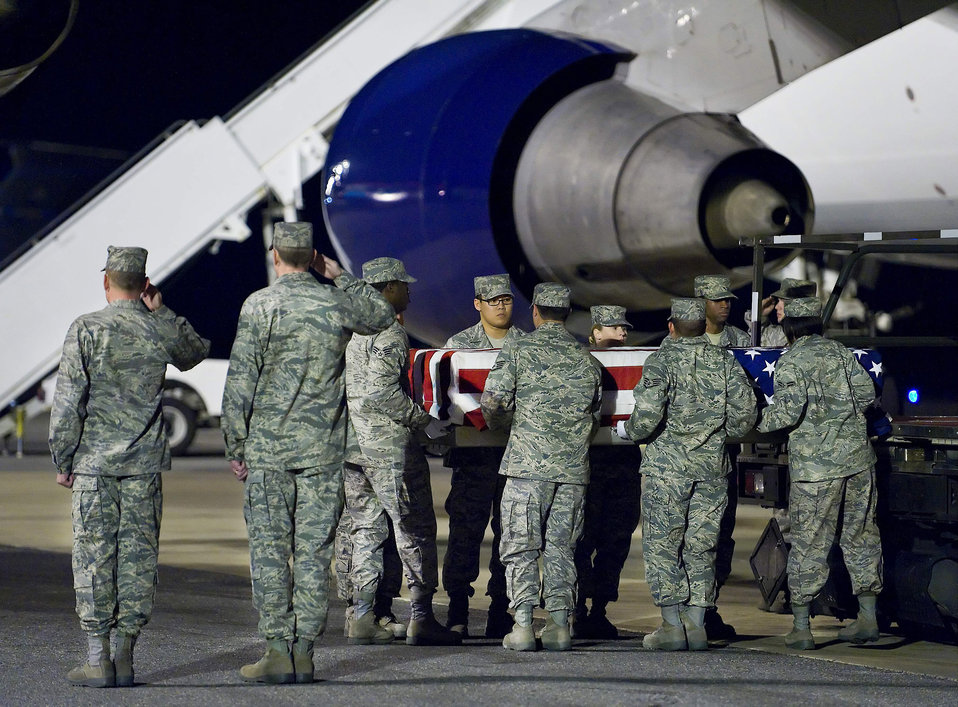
Dignified transfer

An Air Force Mortuary Affairs Operations Center carry team transfers the remains of Staff Sgt. Phillip A. Myers from the aircraft April 5 at Dover Air Force Base, Del. Sergeant Myers died April 4 near Helmand Province, Afghanistan, from wounds suffered from an improvised explosive device.